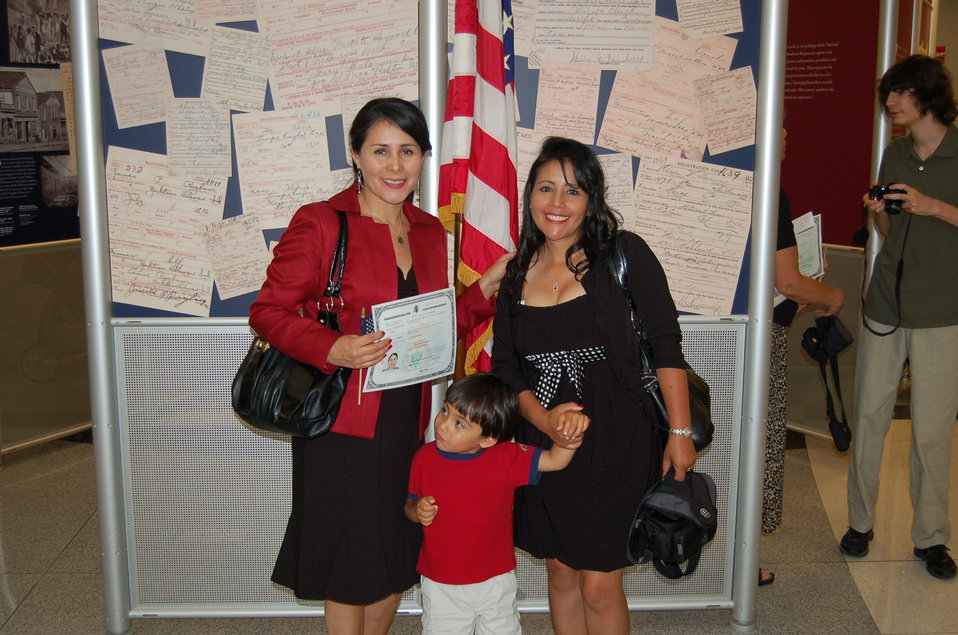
New Citizens